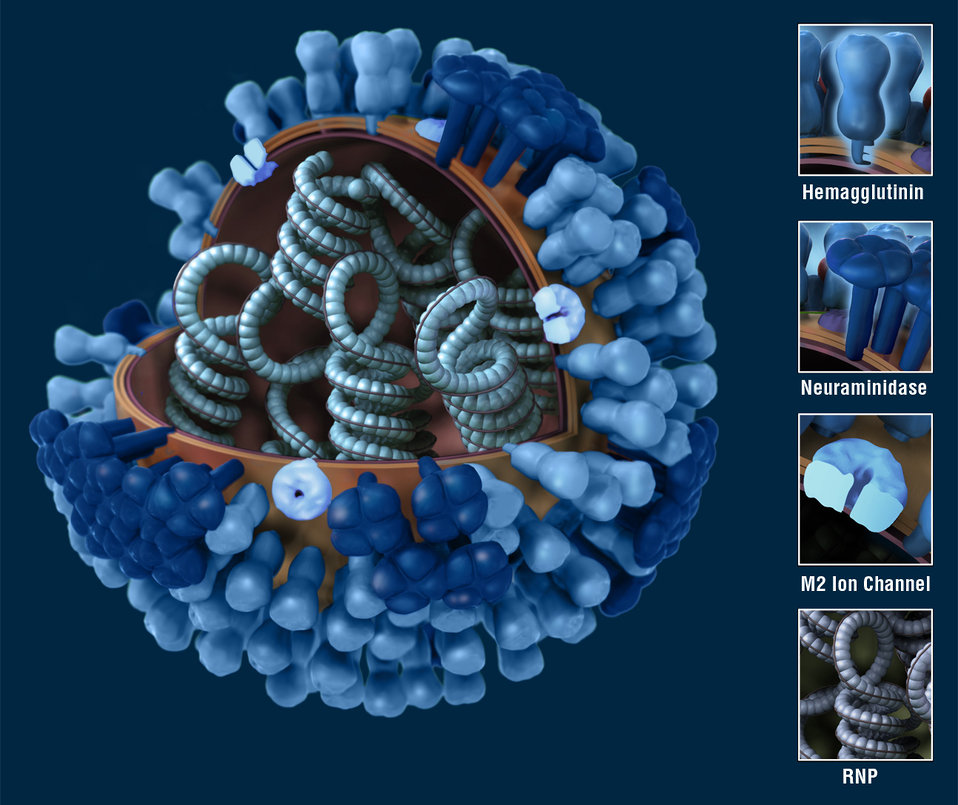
On a dark-blue background, this illustration provides a 3D graphical representation of a generic influenza virion's ultrastructure, and is not specific to a seasonal, avian or 2009 H1N1 virus. A portion of the virion's outer protein coat has been cut away, which reveals the virus' contents, and a key has been included, which identifies these components. See PHIL 11877 for an uncut view of the virion's exterior.